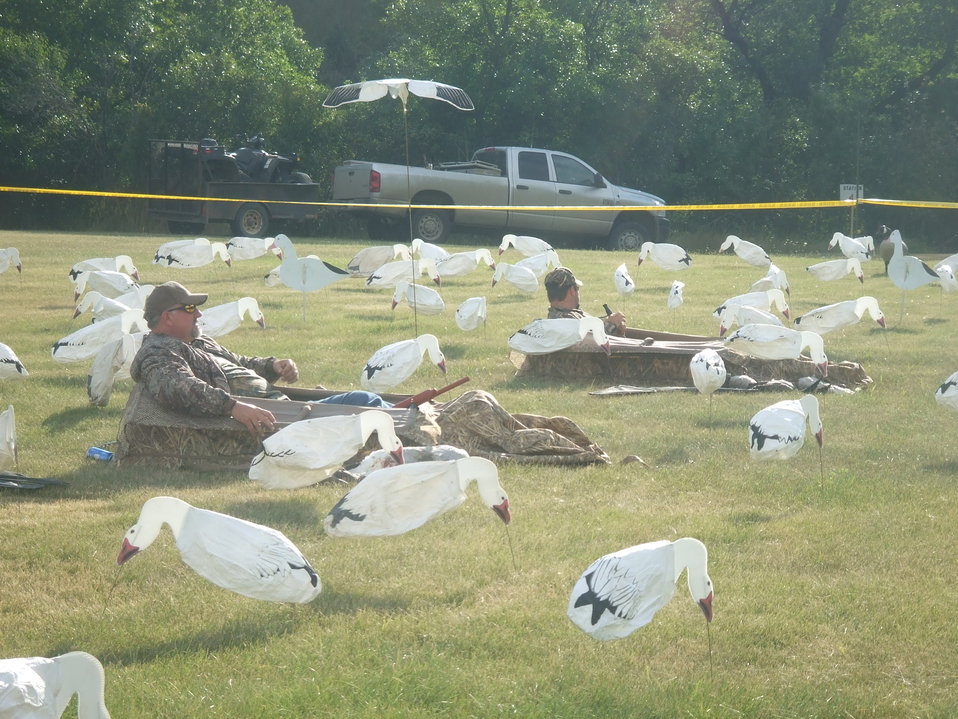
2011 Greenwing Day - Game Warden scenario session

Des Lacs National Wildlife Refuge, Tasker's Coulee

Looks like a beautiful day to be in the blind...